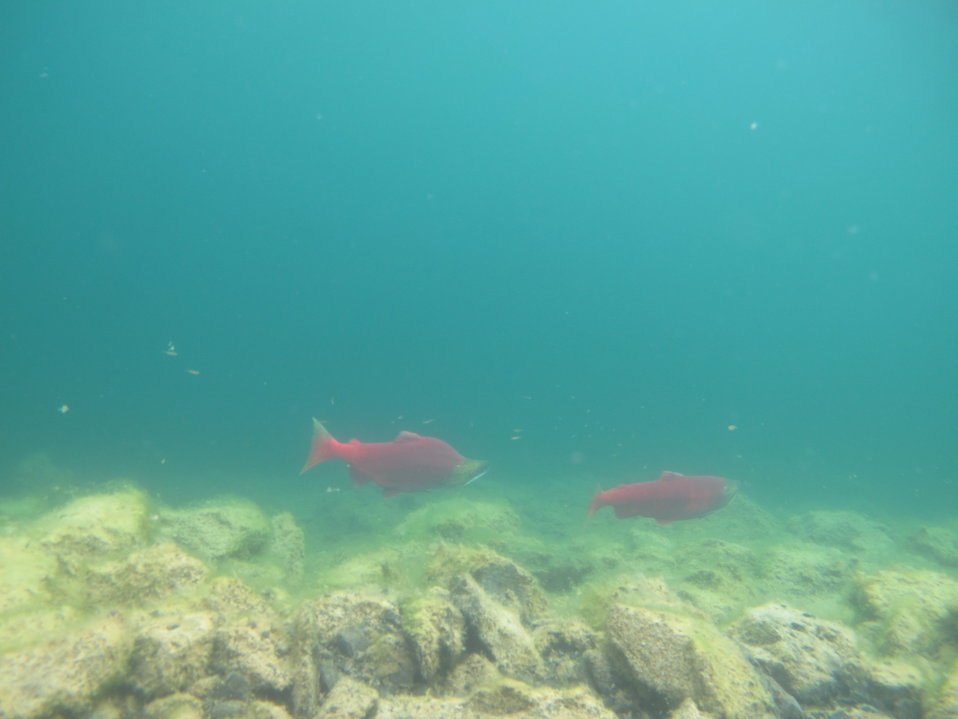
Sockeye pair in Hidden Lake, Alaska